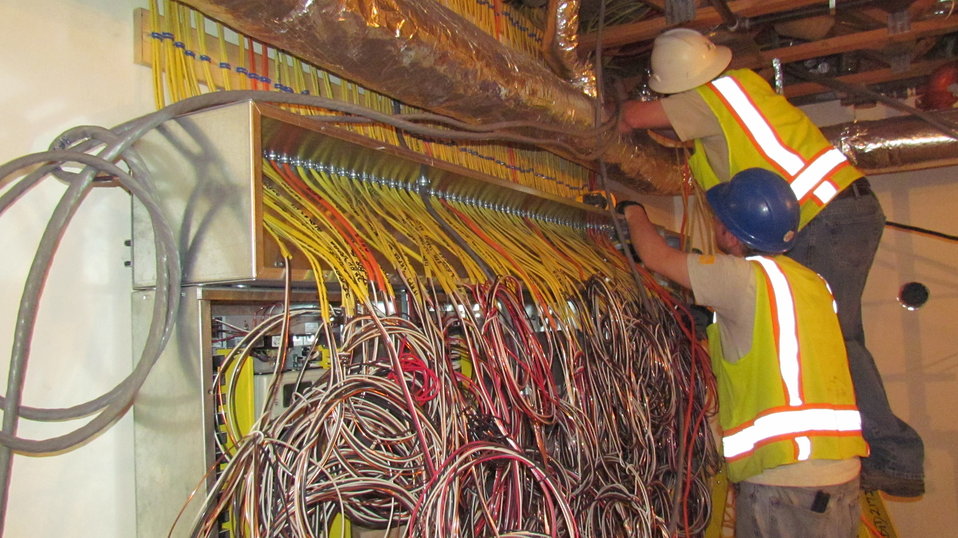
Work progressing connecting individual circuit wires to the panel boxes located in the southwest corner of the basement.